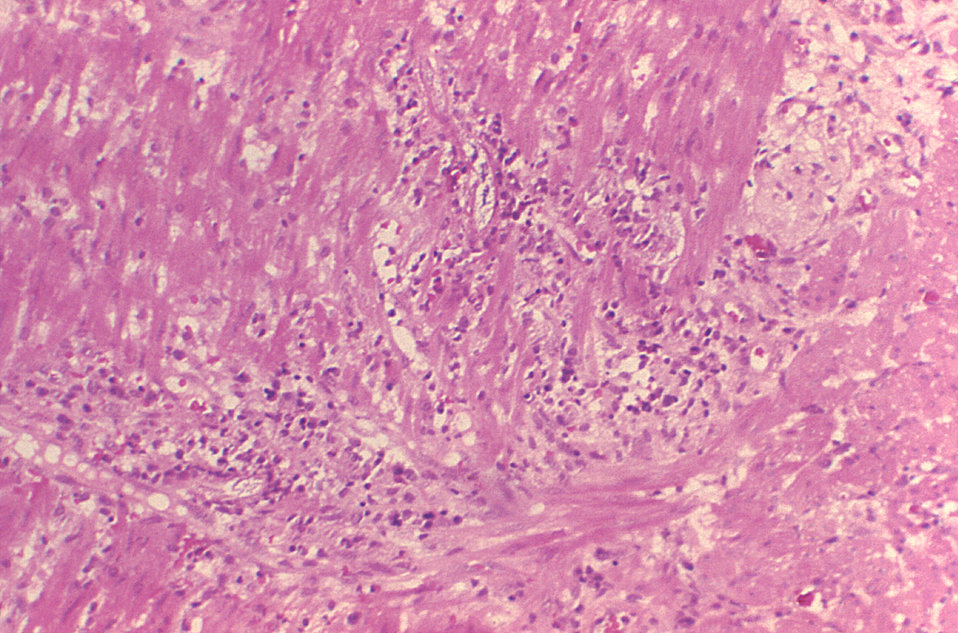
This photomicrograph reveals histopathologic changes indicative of the presence of the intestinal parasitic nematode (roundworm), Strongyloides stercoralis.Clinical Features: